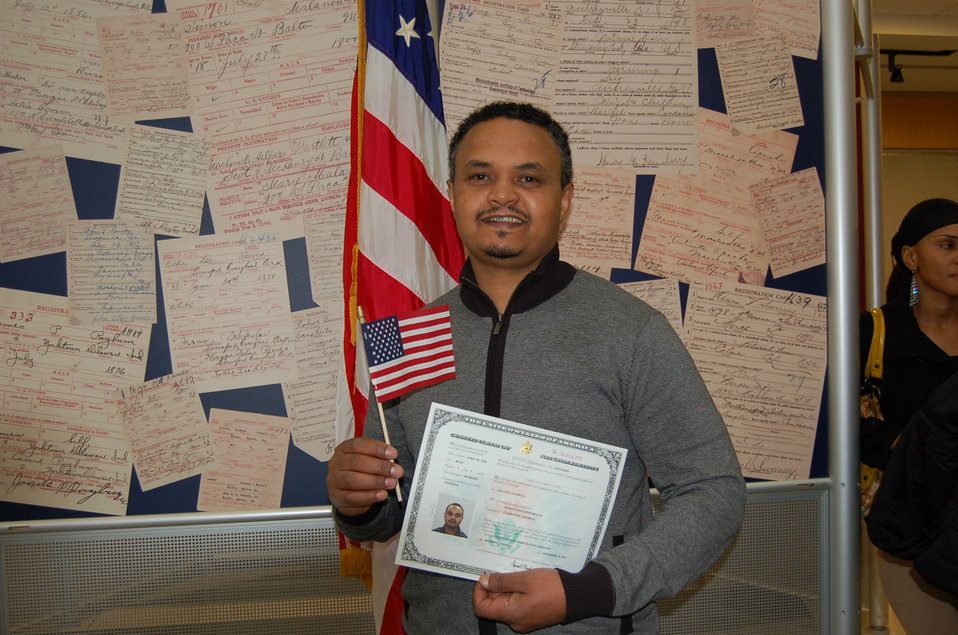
New Citizens